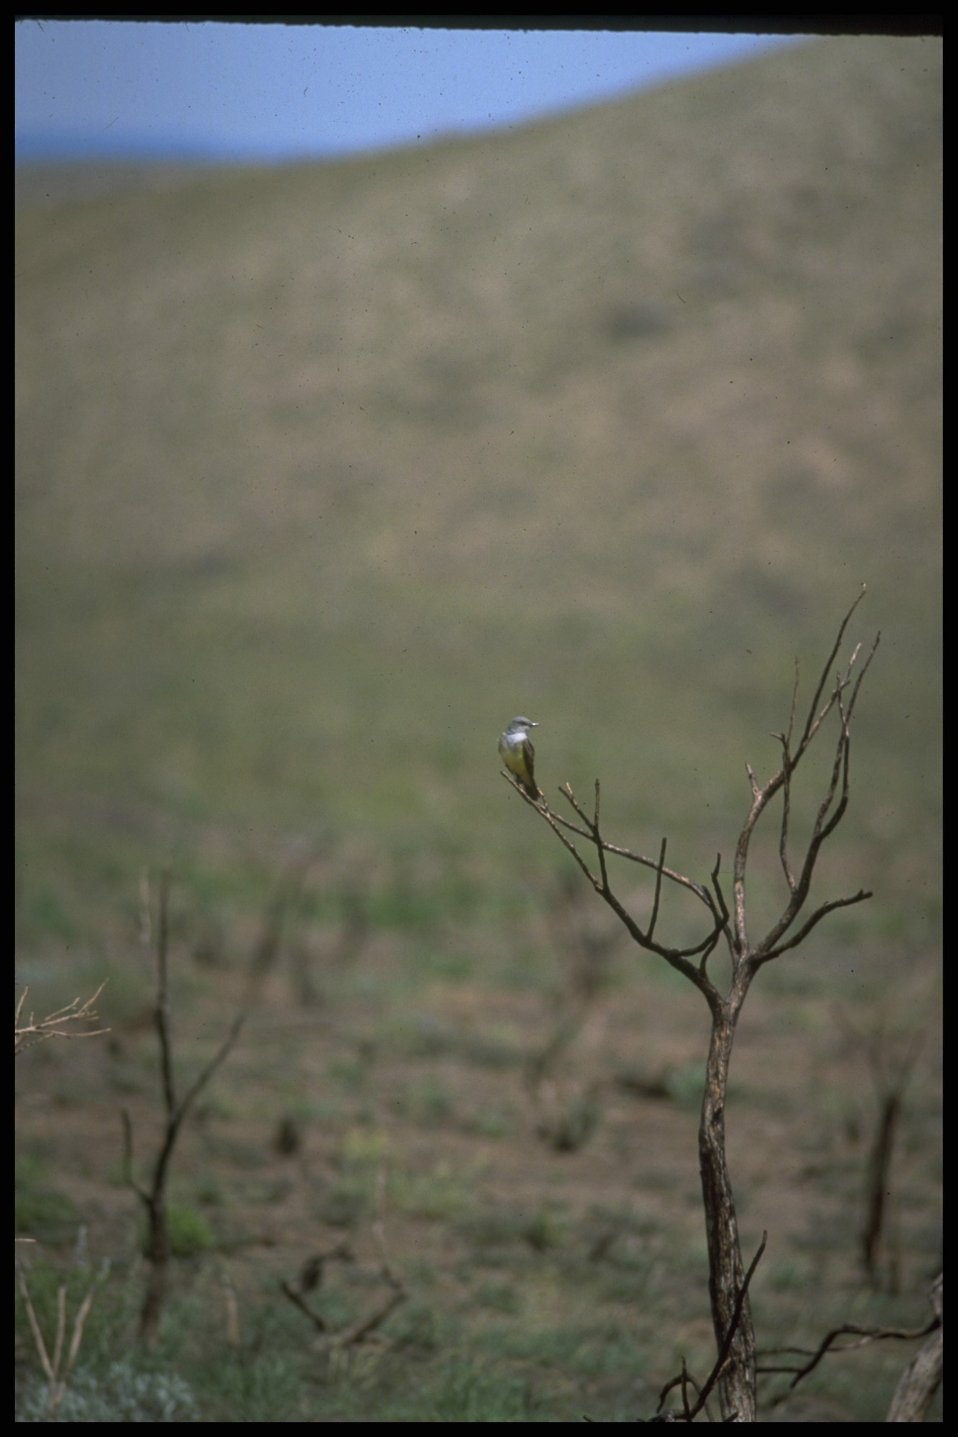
Far shot of Western King Bird. Lakeview District.